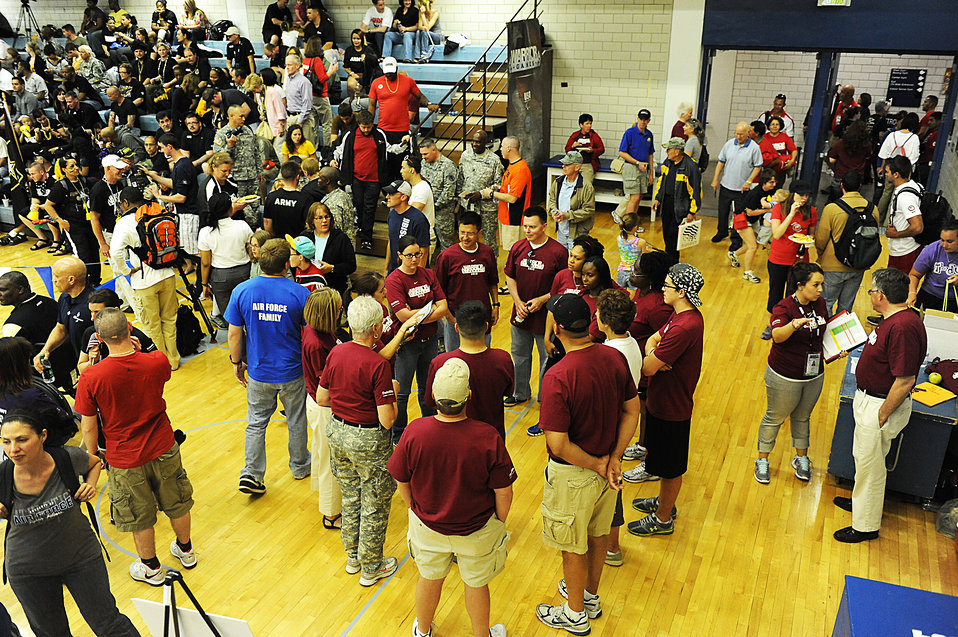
Warrior Games

Volunteers, center, meet before assisting during sitting volleyball games during Warrior Games 2012 at the U.S. Air Force Academy in Colorado Springs, Colo., May 3, 2012.